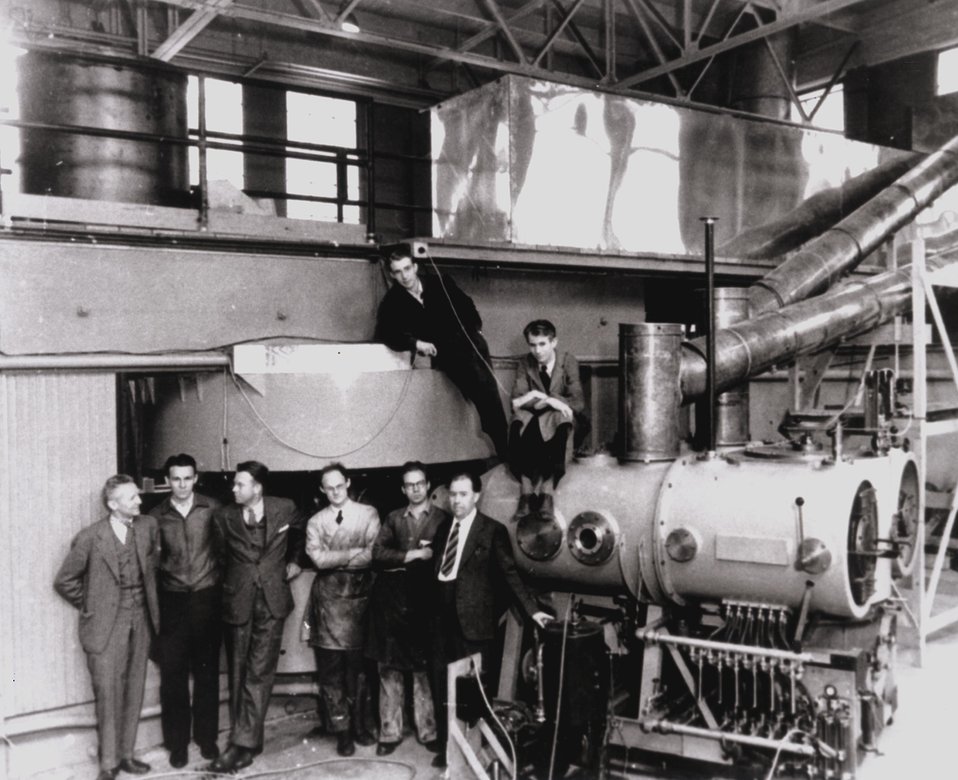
The 60-inch cyclotron at the U of California's Lawrence Radiation Lab soon after its completion in mid-1939.